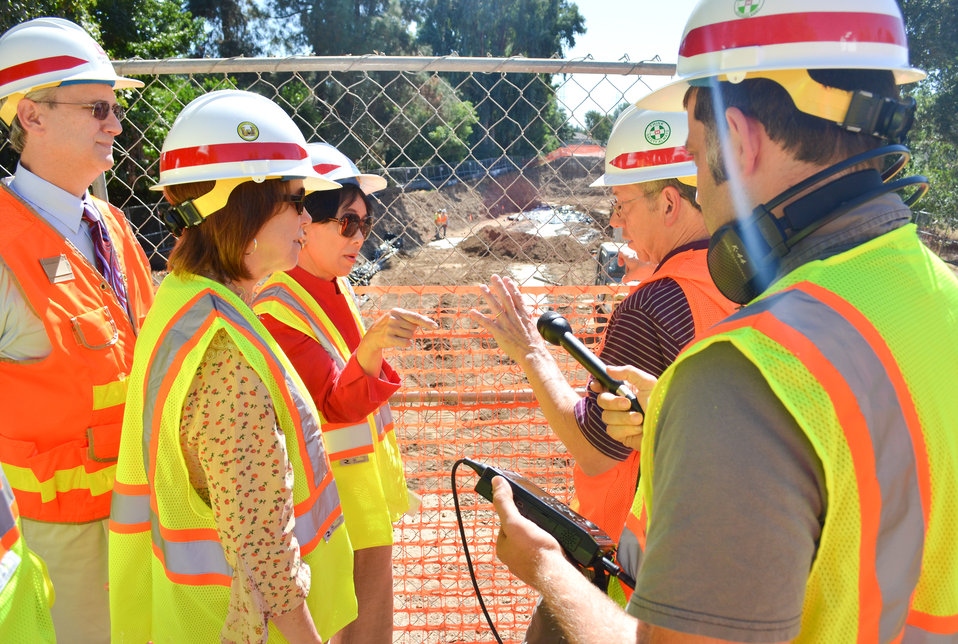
Secretary Darcy, Rep. Matsui visit Sacramento levee project

John Hoge, U.S. Army Corps of Engineers project manager (center right), explains construction progress on an American River levee improvement project to U.S. Rep. Doris Matsui (center right) and Jo-Ellen Darcy, Assistant Secretary of the Army for Civil Works (center left), in Sacramento, Calif., Sept. 27, 2011. Under its American River Common Features project, the Corps’ Sacramento District is building a seepage wall into the levee to strengthen it and help prevent water from leaking through or under it.